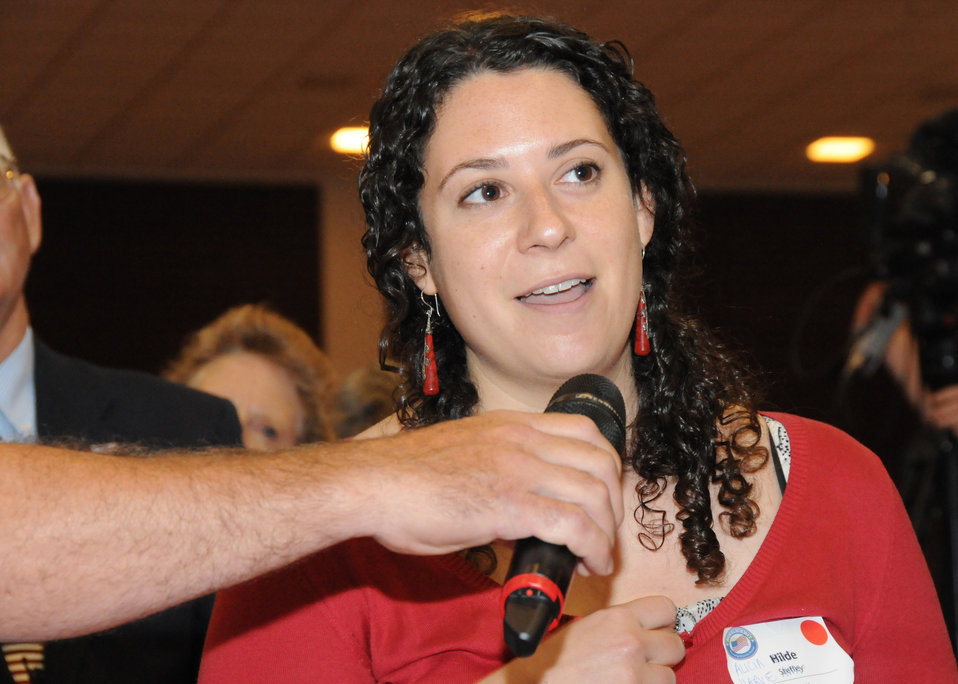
A Dialogue on Rural America was the first discussion panel held at the National Rural Summit held at Jefferson College in Hillsboro, MO., on Thursday, June 3, 2010. Audience participants line up to ask questions of the panelists. USDA photo 10di1386-0235.